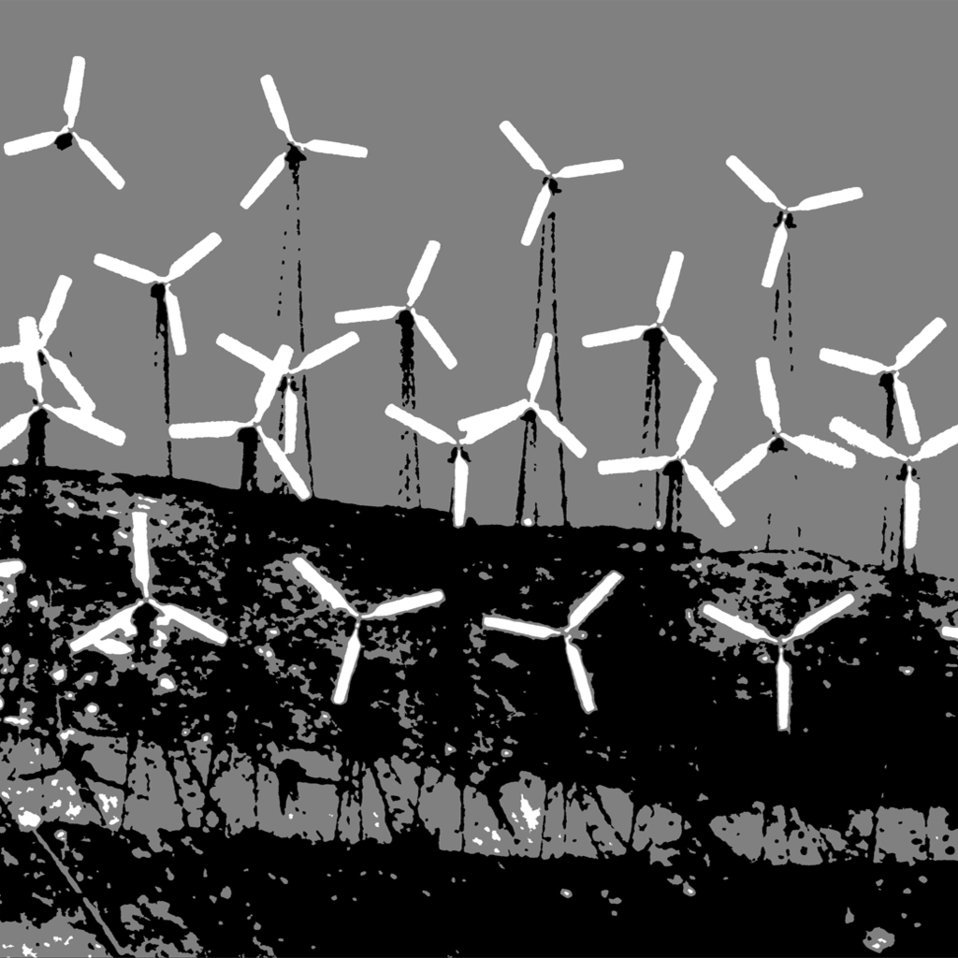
Uploaded by request of Maka Amaviska

Taken at Tehachapi, California wind farm

35 mm black and white film, negative scanned to photoshop darkroom for artistic manipulation, title 'Windpower'